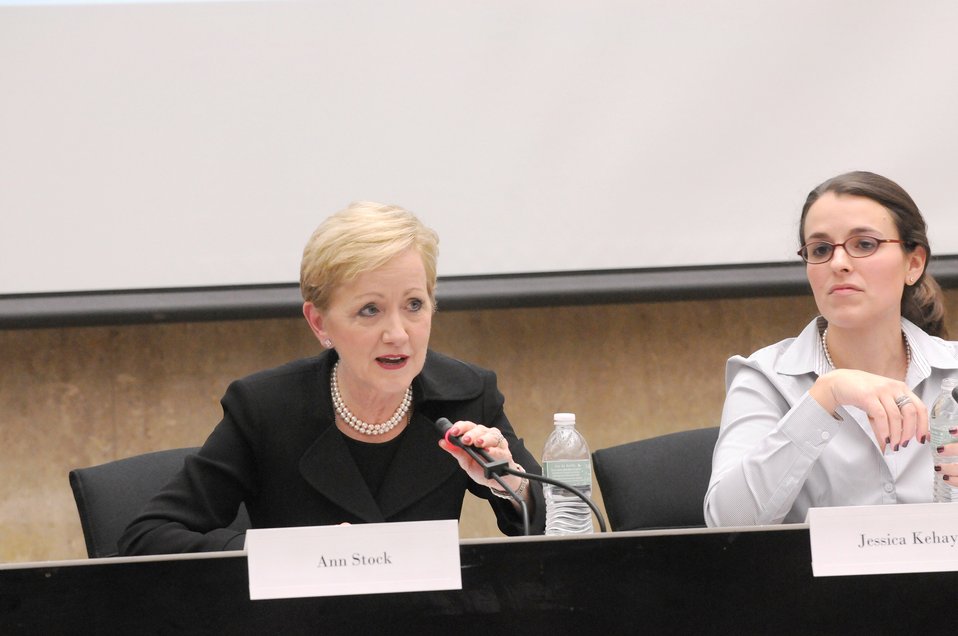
Assistant Secretary Stock and Education Panelist Kehayes Participate in the Education Panel

U.S. Assistant Secretary of State for Education and Cultural Affairs Ann Stock (left) and Education panelist Jessica Kehayes, Director of Education at the Asia Society, participate in the U.S-India People to People Conference held at the U.S. Department of State in Washington, D.C., on October 28, 2010.